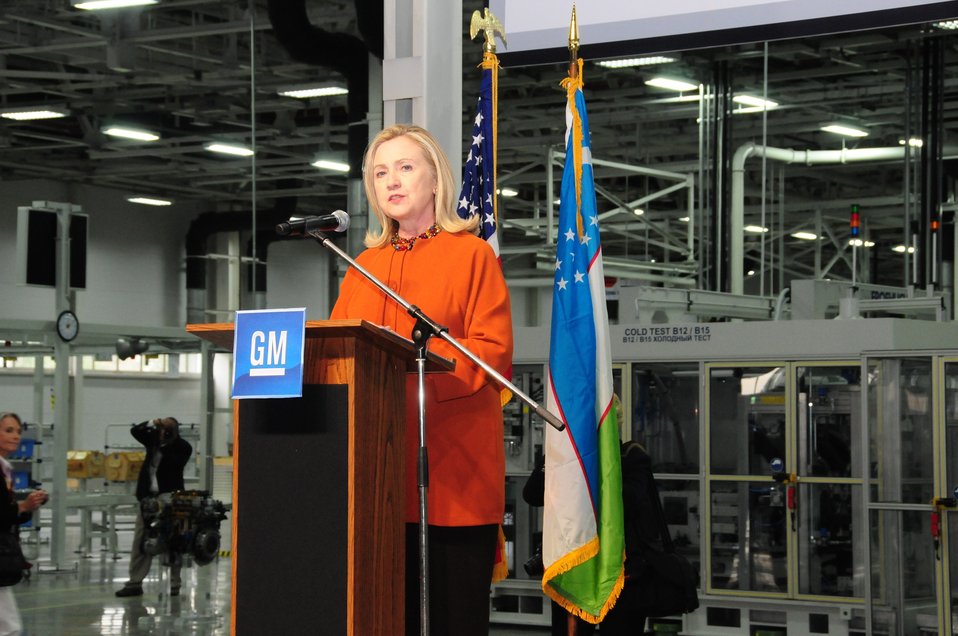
Secretary Clinton Delivers Remarks at GM Powertrain Factory

U.S. Secretary of State Hillary Rodham Clinton delivers remarks at the General Motors (GM) Powertrain factory in Tashkent, Uzbekistan, on October 23, 2011.